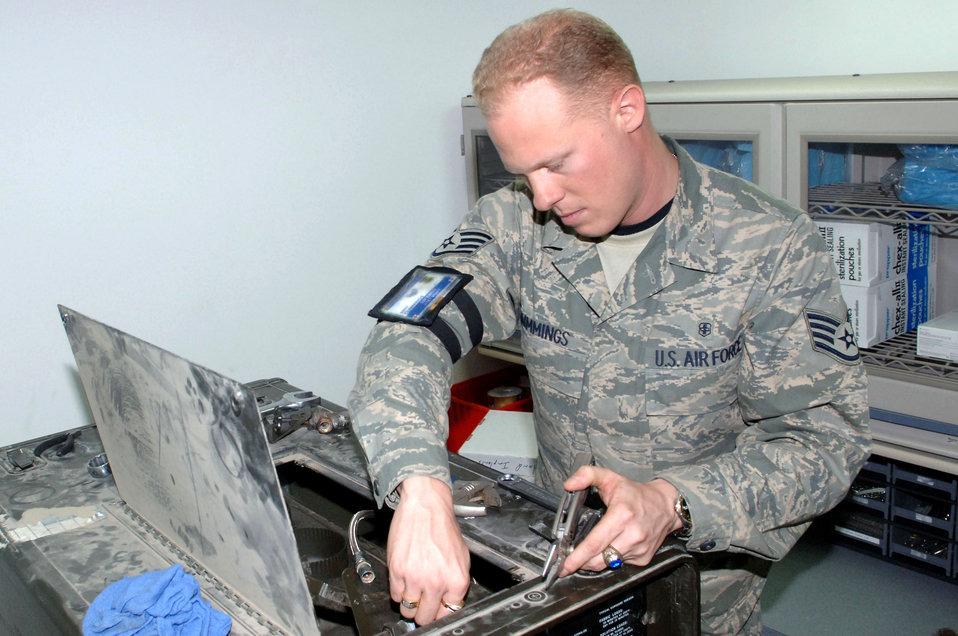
Biomedical maintainers ensure combat medical success

Staff Sgt. Brian Cummings removes a screw from the inside of a sterilizer machine here during routine maintenance Jan. 12 at Balad Air Base, Iraq. The machine is used to sterilize surgical equipment at the Air Force Theater Hospital. Sergeant Cummings is a 332nd Expeditionary Medical Support Squadron biomedical equipment technician and deployed from Langley Air Force Base, Va.